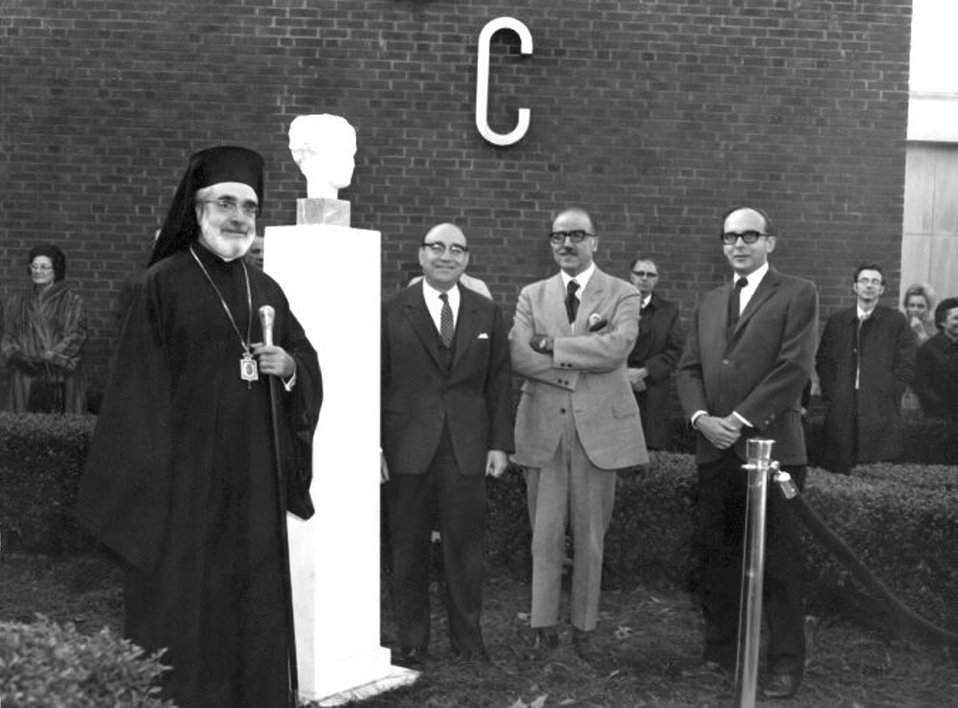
Hygeia Dedication Ceremony.